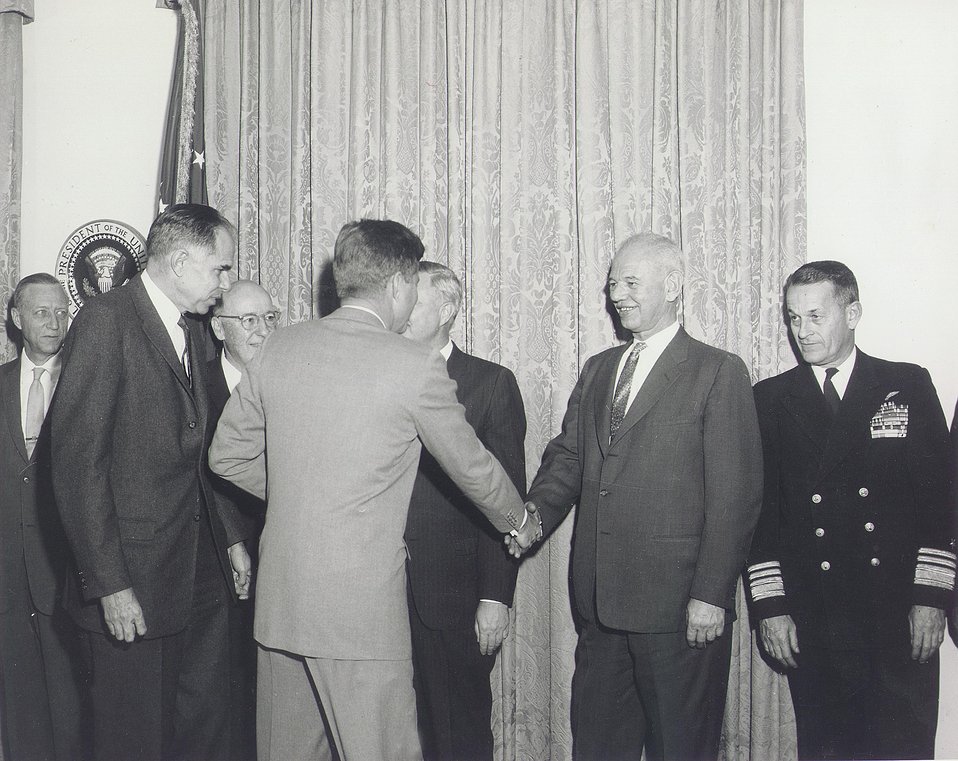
Fermi Award Ceremony for Dr. Bethe in Washington on Dec. 1, 1961.